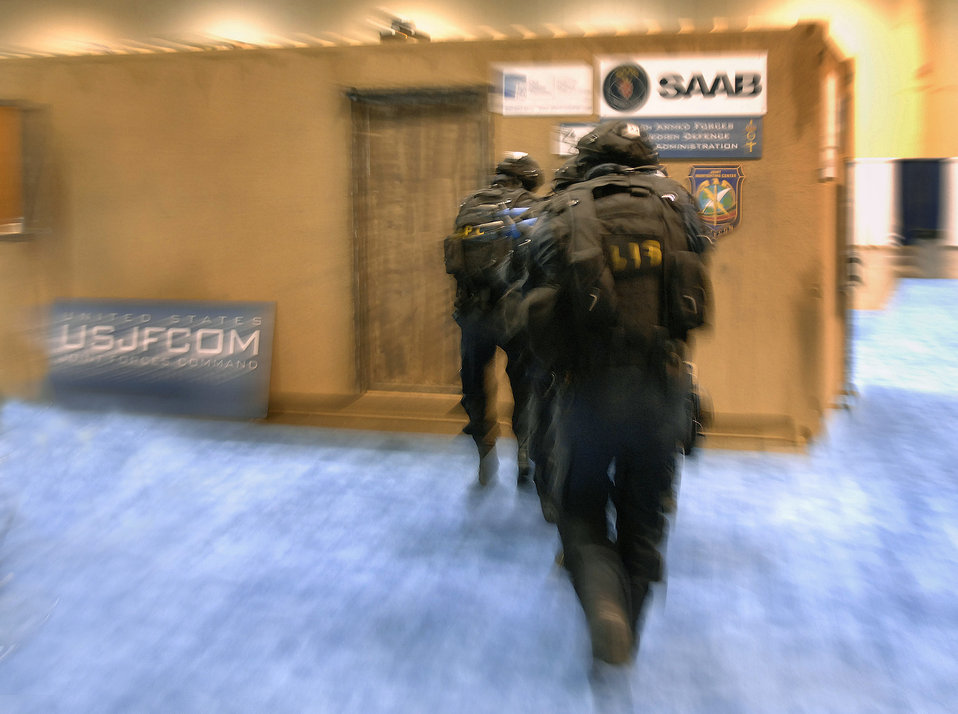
Conference makes virtual training a reality

A Swedish special weapons and tactics team rushes into a simulated hostage rescue situation Nov. 27 during the Interservice/Industry Training, Simulation and Education Conference in Orlando, Fla.